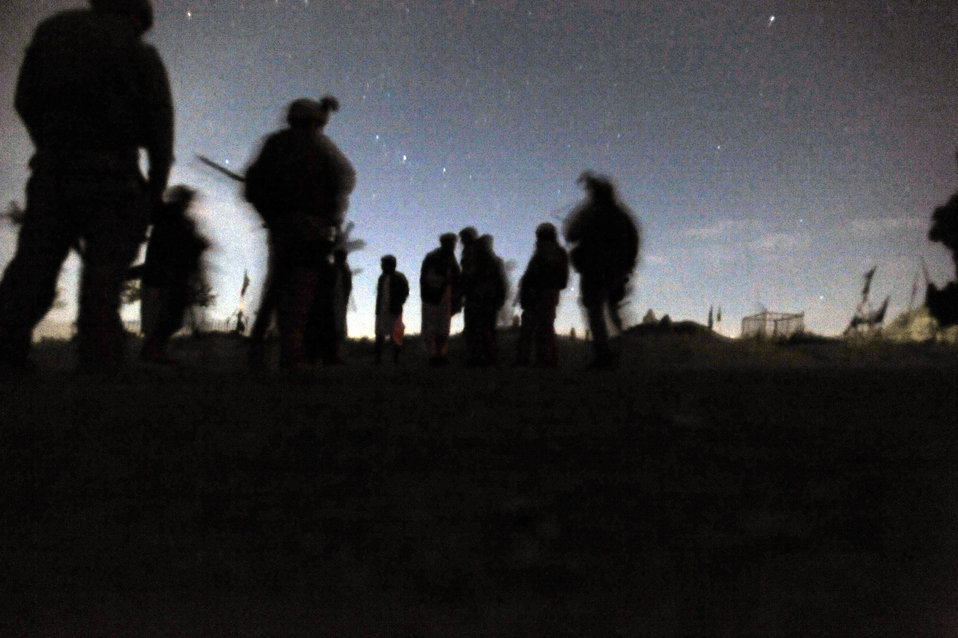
OSI protects Airmen in Afghanistan

Army Soldiers with Task Force Morgan and special agents assigned to the Air Force Office of Special Investigations Expeditionary Det. 2405 wait for the next objective during a search and capture mission March 30, 2010, in Parwan Province, Afghanistan.